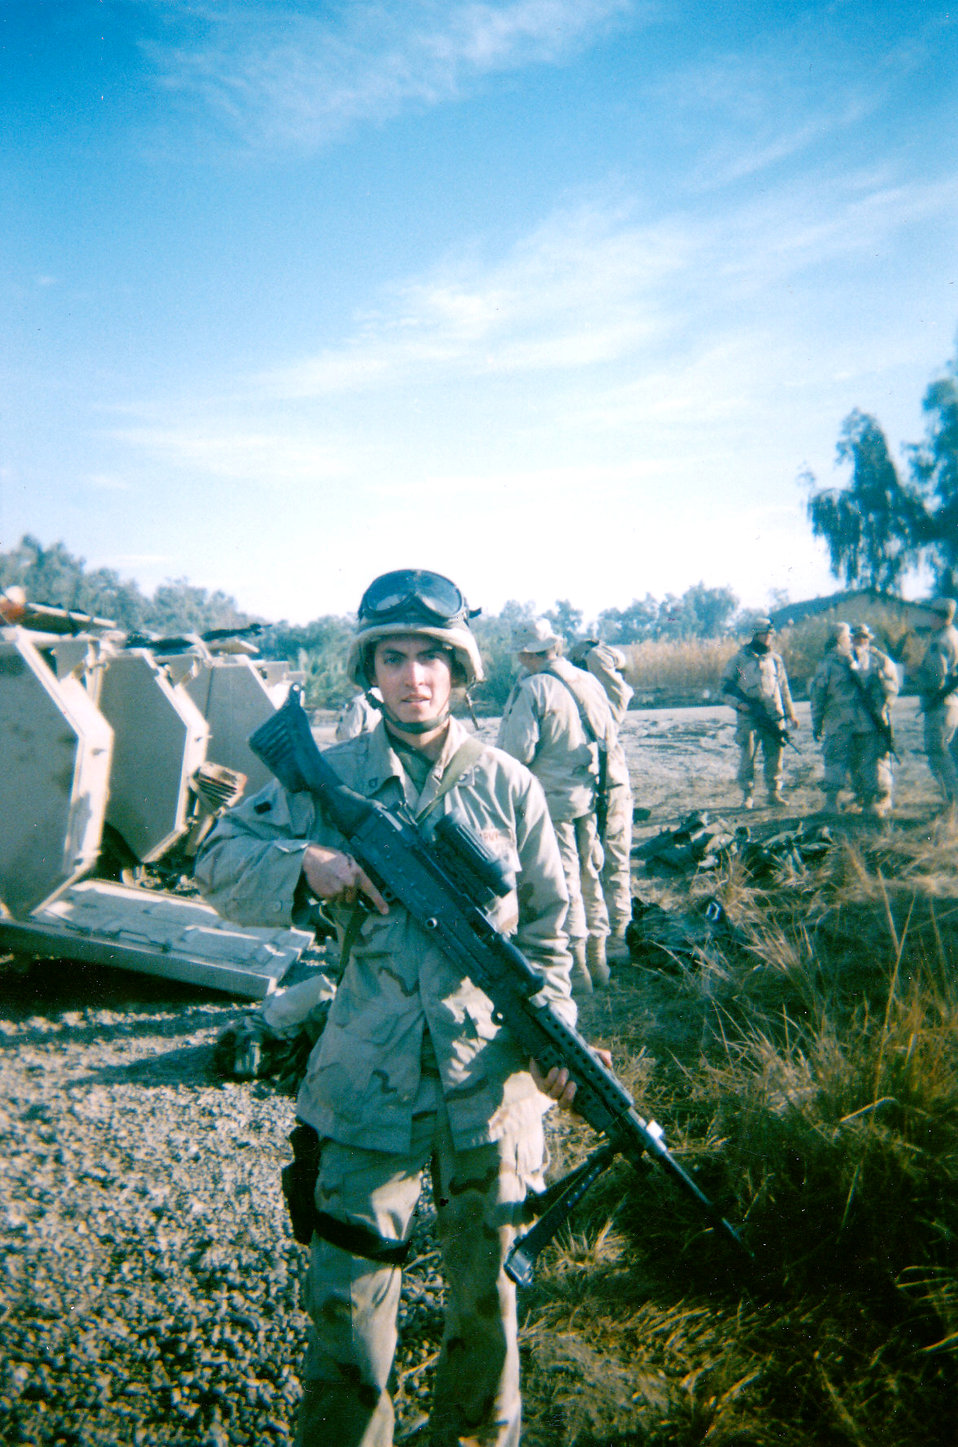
Luis Zaragoza, an Office Assistant with Chicago the Ecological Services Office, was deployed to Fallujah, Iraq, from September 2003 to October 2004 at the age of 18 with the U.S. Army in support of Operation Iraqi Freedom. Zaragoza reminds us that “not all veterans fought and many never deployed, but all sacrificed something of themselves in order to serve their country. … All who have served have hit the pause button on their lives – putting aside personal goals and aspirations, even if for a short time, so that others may live in relative peace and comfort.” He adds that “veterans, especially those who have served in the past 10 years are highly motivated, capable of digesting complex systems and information, motivated individuals looking for a chance to keep serving their country.” He got that chance with the Fish and Wildlife Service, which gave him the ability to finish my Masters of Public Administration degree. He says he hopes “to use those skills with the Service.“